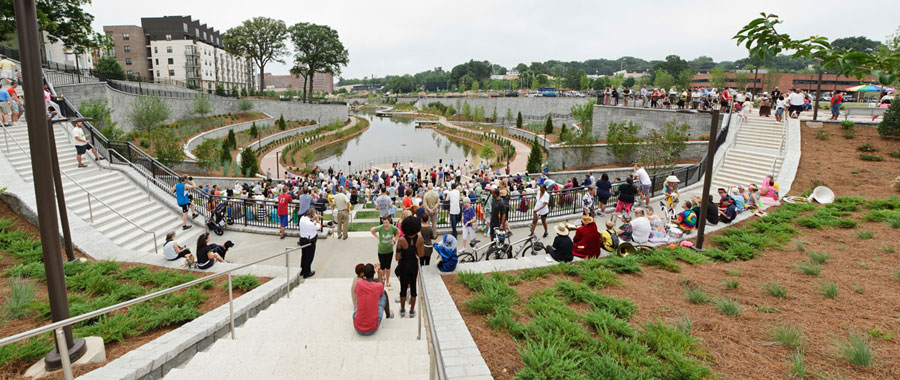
Atlanta COVER

Pedestrians and bicyclists enjoy Atlanta, Georgia’s Historic Fourth Ward Park. The park and the connecting Eastside Trail are the Overall Excellence winners of EPA’s 2013 National Award for Smart Growth Achievement. The award is given annually for creative, sustainable initiatives that better protect the health and the environment of our communities while strengthening local economies. In 2013, EPA recognized innovative projects in seven communities.